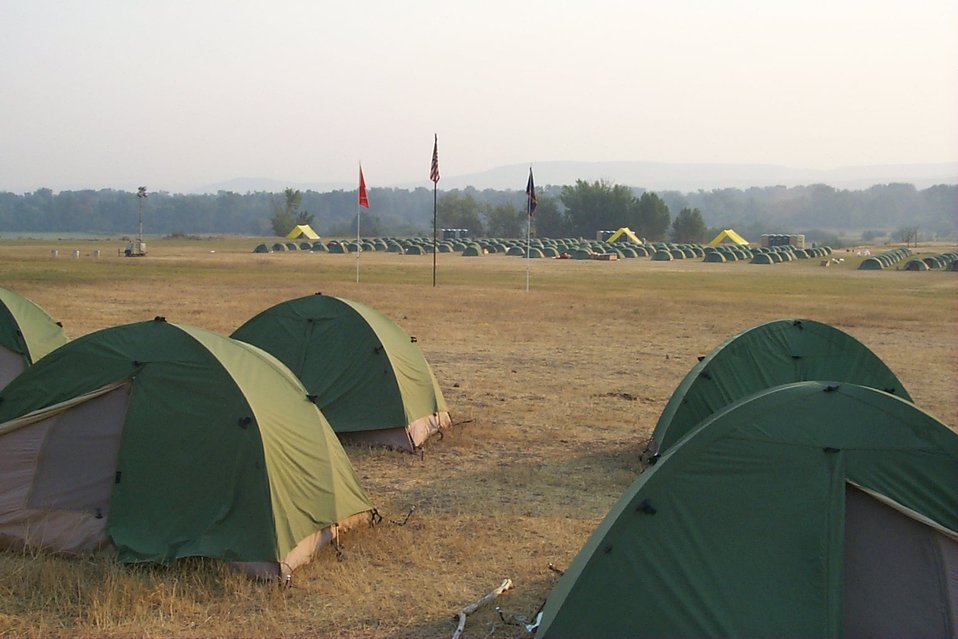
Camp Fire Clearwater Fire Salmon Field Office USRD Upper Snake River District